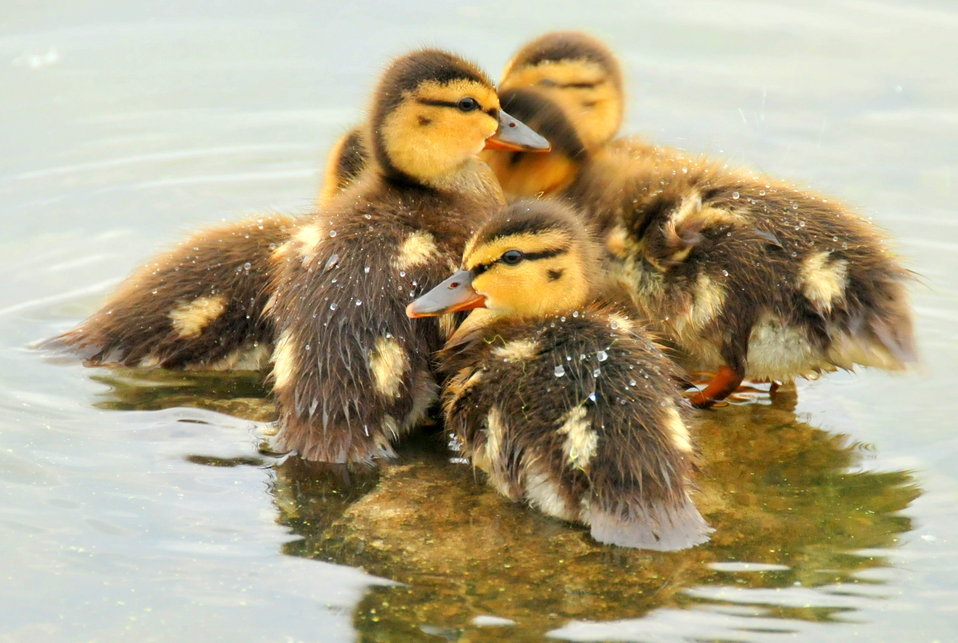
Mallard Ducklings 2